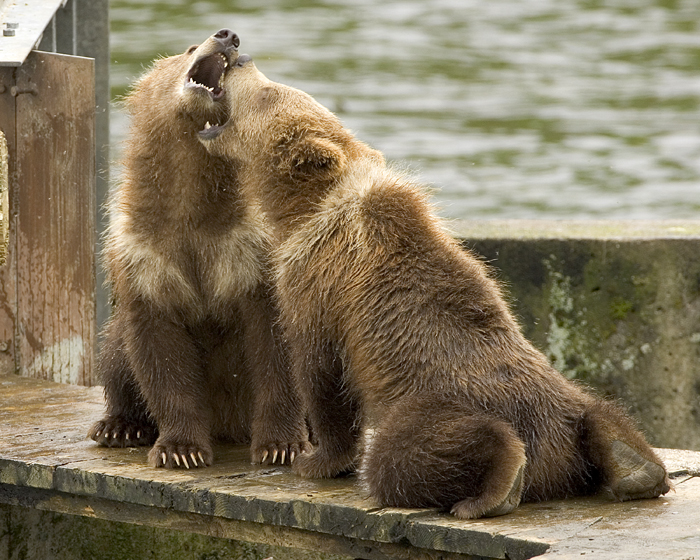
Brown bear cubs

Two grizzly bear cubs on a dock playing with each other with their mouths open.